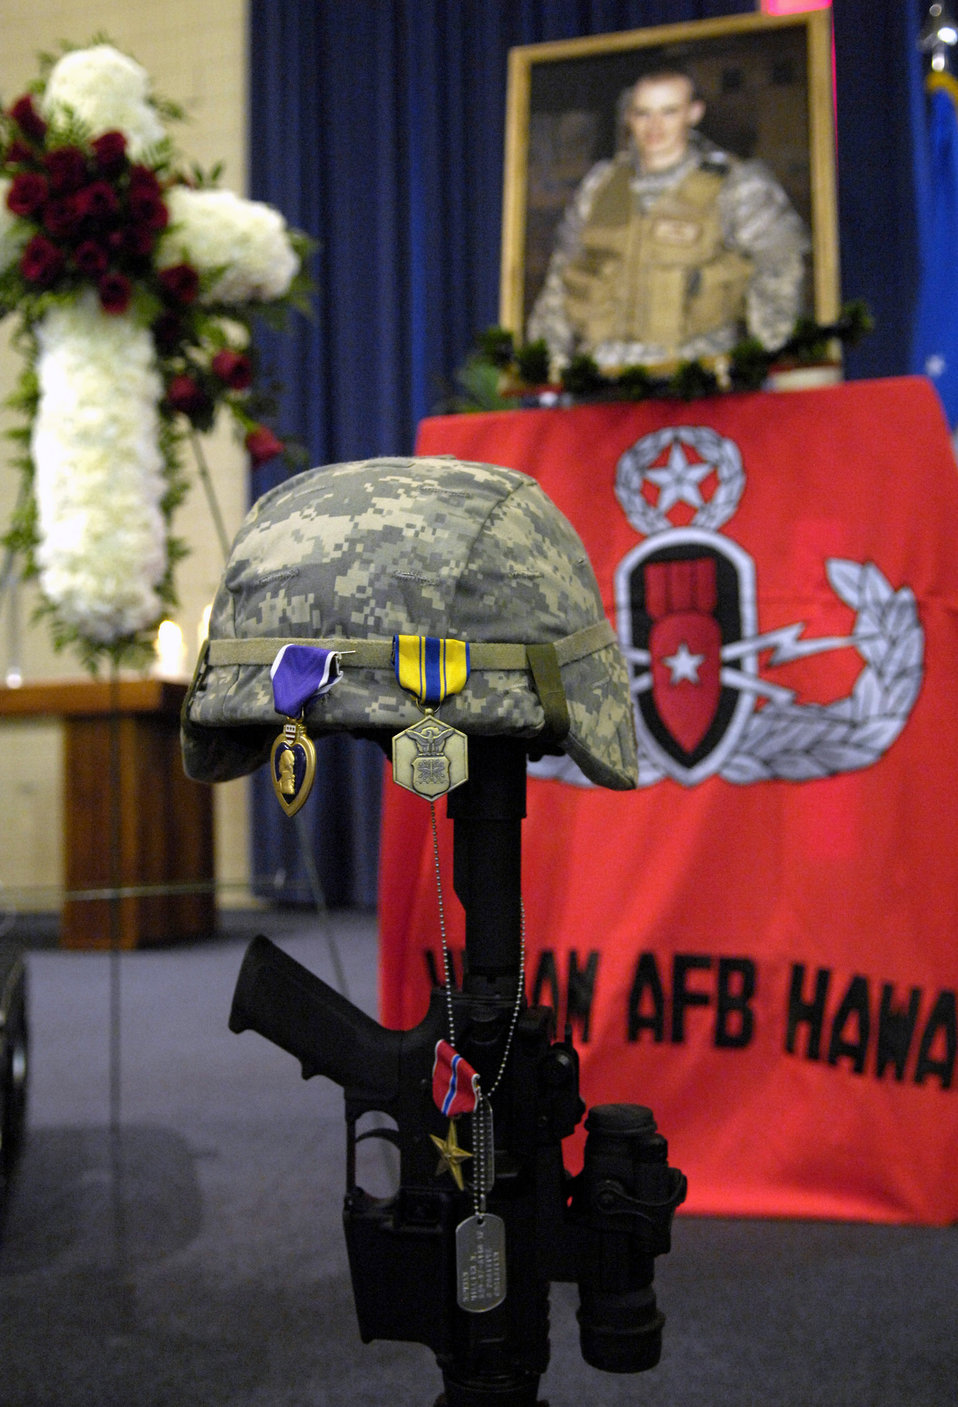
Solemn service

A tribute is displayed during a memorial service honoring Senior Airman William Newman at the base chapel June 13 at Hickam Air Force Base, Hawaii. Airman Newman, an explosive ordnance disposal technician assigned to the 15th Civil Engineer Squadron, was killed June 7 by an improvised explosive device, which detonated while he was supporting Army and Iraqi security forces near Mishna, Iraq.